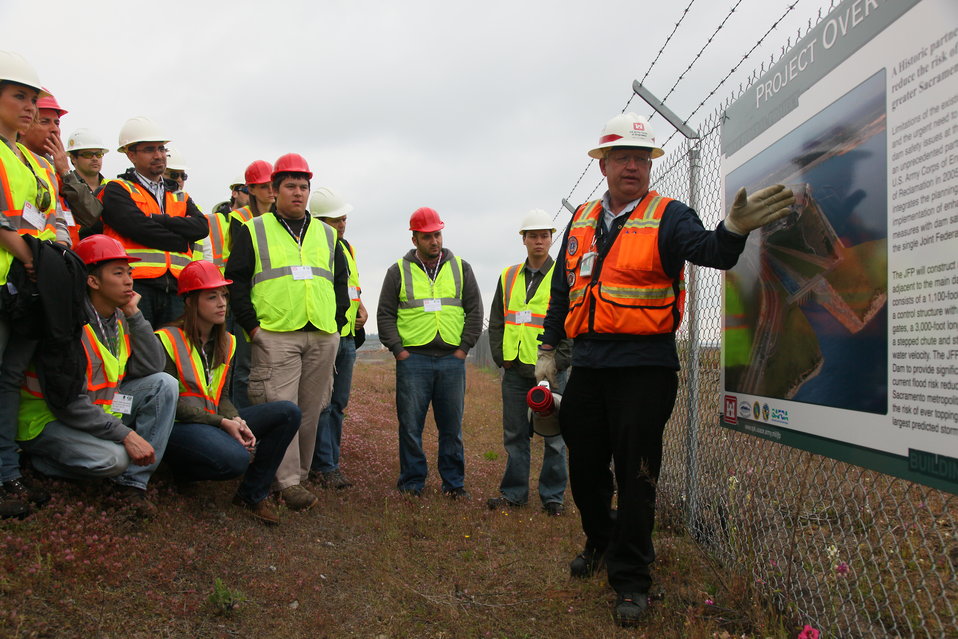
Sacramento State engineering students get a Folsom site tour

Jon Revolinsky (right), a project engineer with the U.S. Army Corps of Engineers Sacramento District, gives a briefing to engineering students from California State University-Sacramento at Folsom Lake in Folsom, Calif., April 25, 2012. Revolinsky and other Corps personnel from the Folsom Dam Joint Federal Project provided a tour of the construction site for the auxiliary spillway to the future engineers.